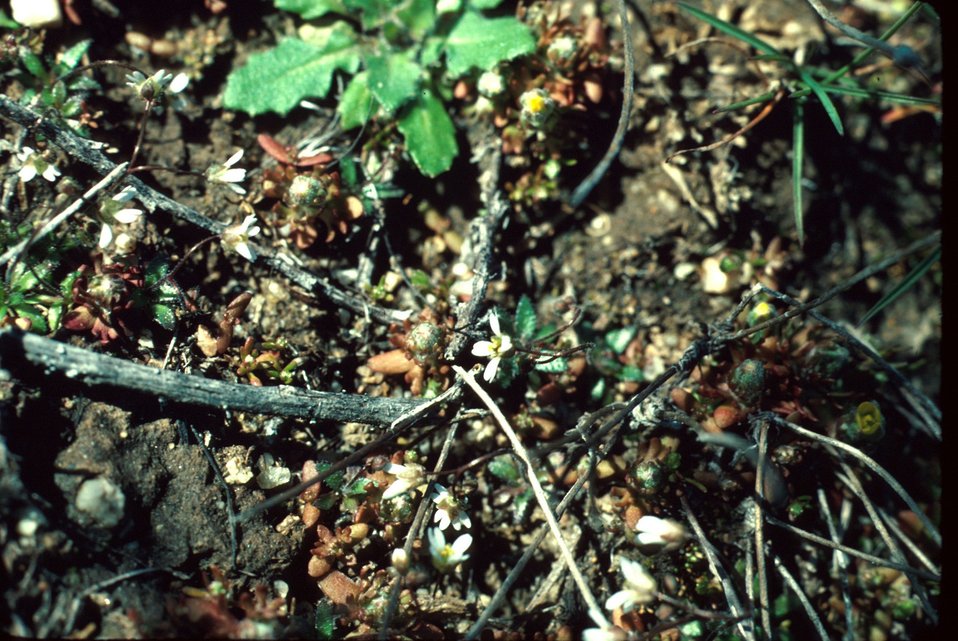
Draba verna Wildflower